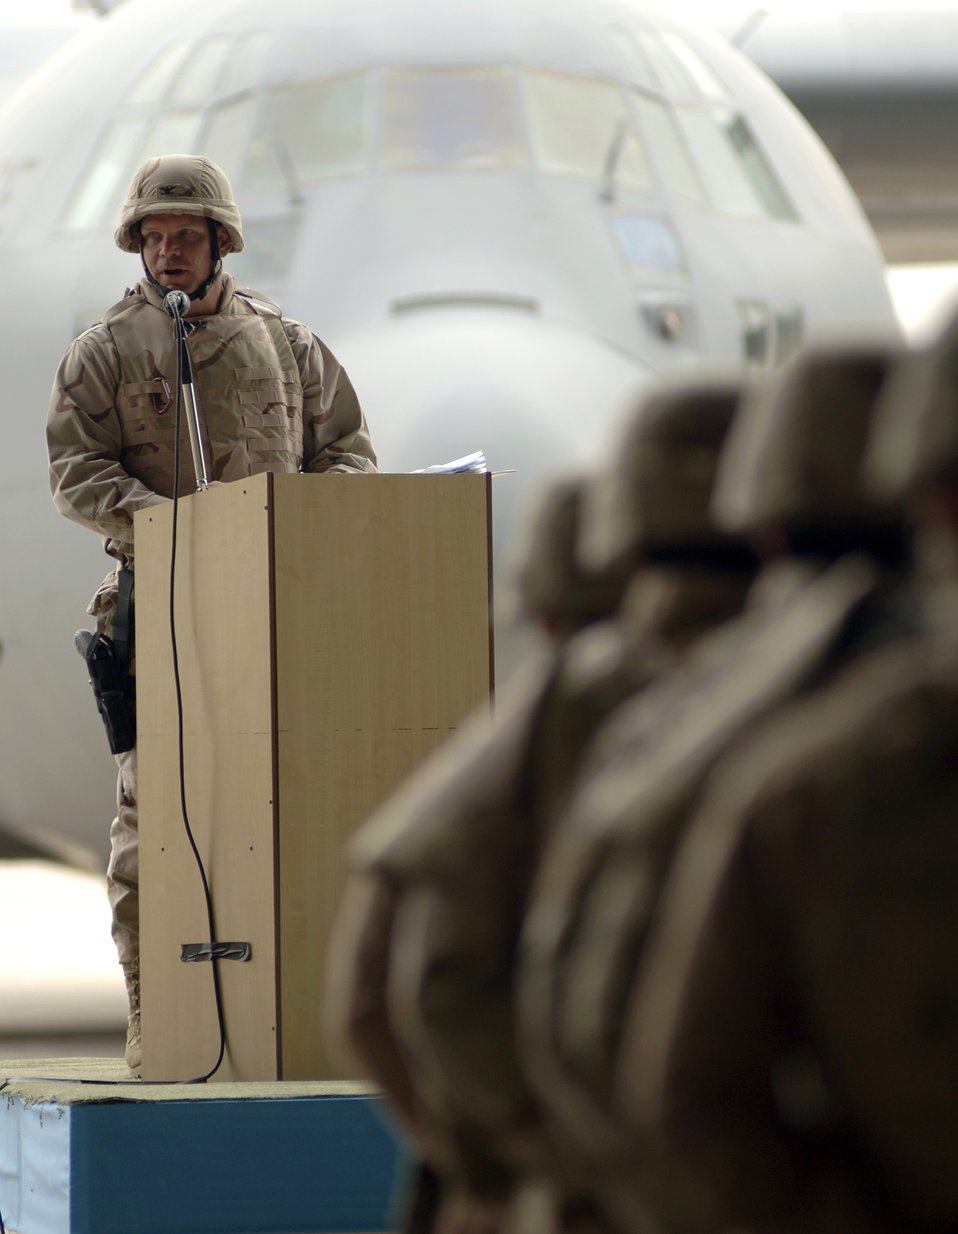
Operation Iraqi Freedom

Baghdad, Iraq -- Col. Mark J. Schmitz delivers a speech after assuming command of the 370th Air Expeditionary Advisory Squadron at the New Al Muthana Air Base April 22.